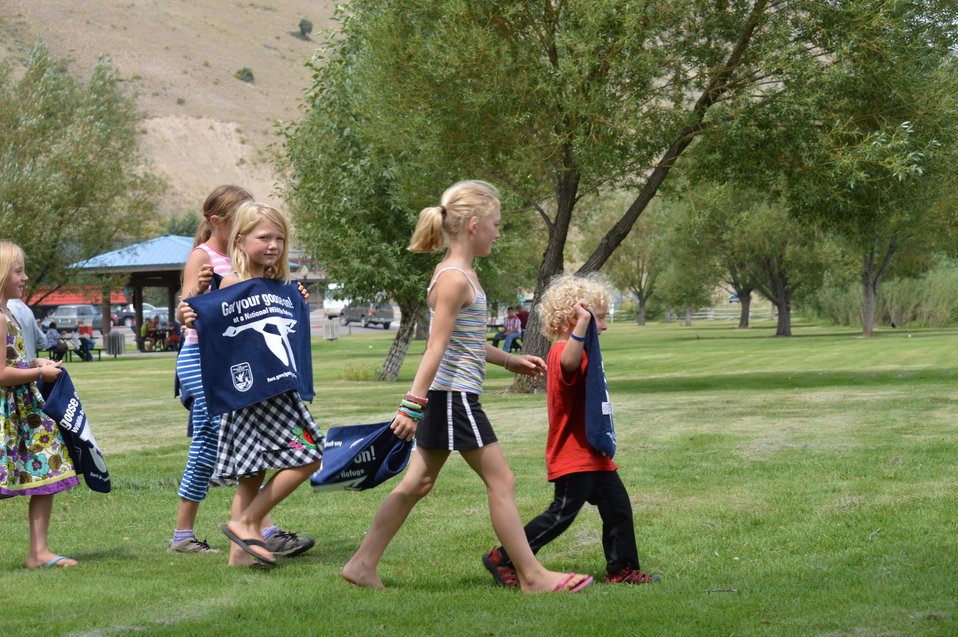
Get Your Goose On! - National Elk Refuge Style

On August 10, 2012 the U.S. Fish and Wildlife Service and Partners celebrated the 100 year anniversary of the establishment of the National Elk Refuge. In these photos, young attendees, along with Puddles the Blue Goose and the National Elk Refuge's mascot, showed us how to Get Your Goose On! with style.